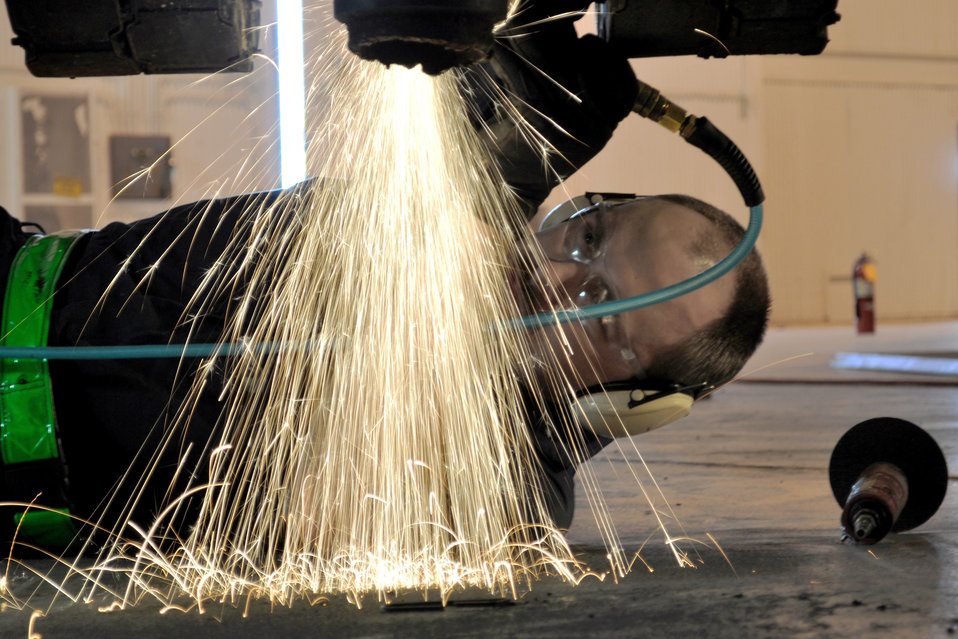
Sparks Fly

Sparks bounce off the floor as Tech. Sgt. Joseph Martinek grinds a landing gear mount March 4, 2011, on a C-118 Liftmaster that is being restored by active-duty and Reserve Airmen and civilians at Joint Base McGuire-Dix-Lakehurst, N.J. Sergeant Martinek is a metals technology specialist with the 305th Maintenance Squadron. Liftmasters were the first cargo airplanes stationed at JB McGuire and helped the base to define its role as an air mobility gateway. When the restoration is finished, the aircraft will be displayed near the base’s passenger terminal.